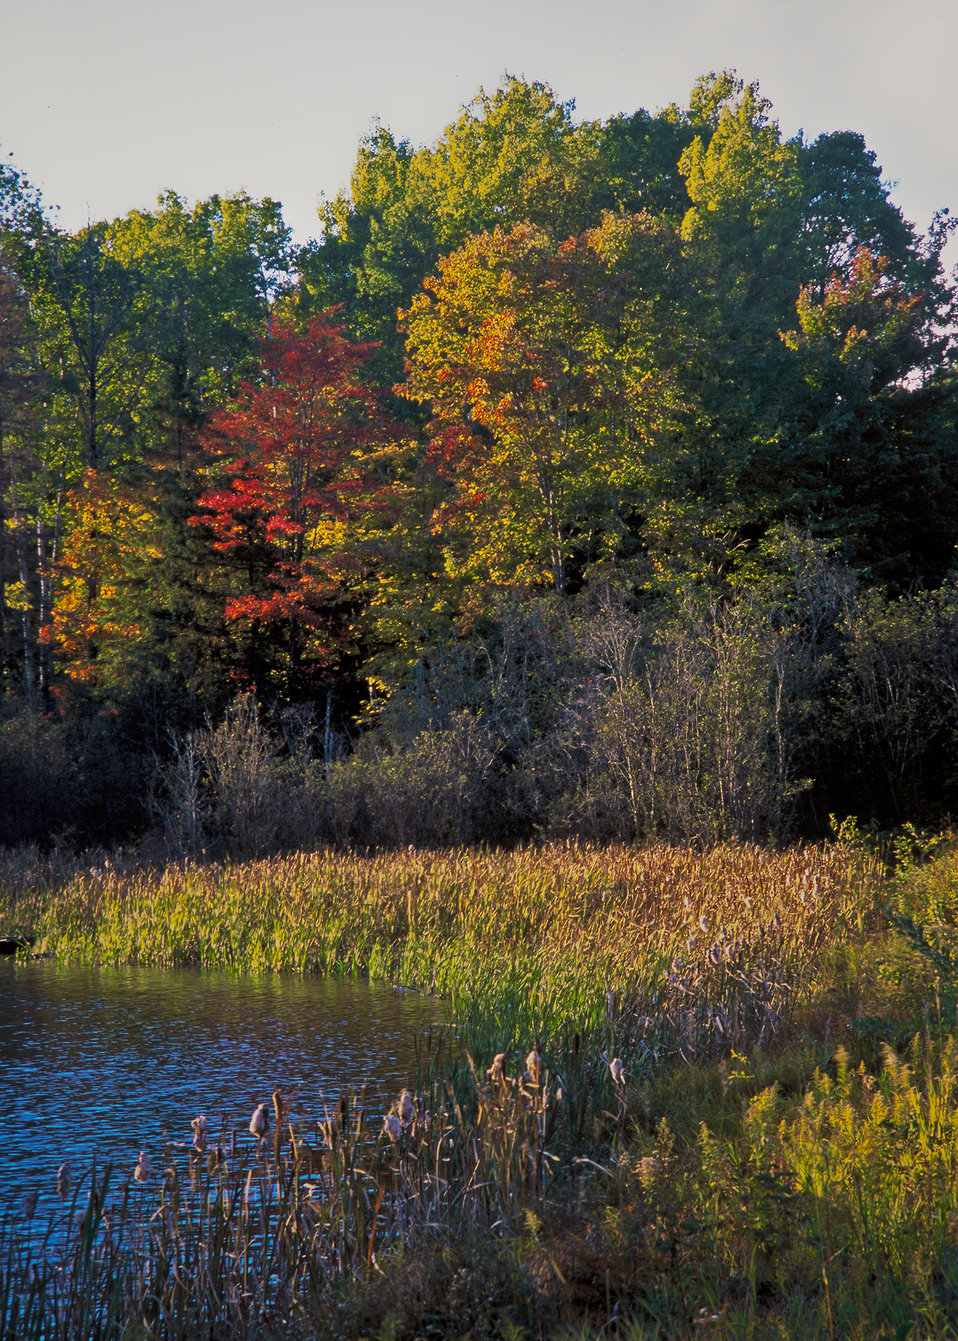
The Hiawatha National Forest on the Upper Peninsula of Michigan. North, South, East or West the National Forests are a great natural resource to be enjoyed.